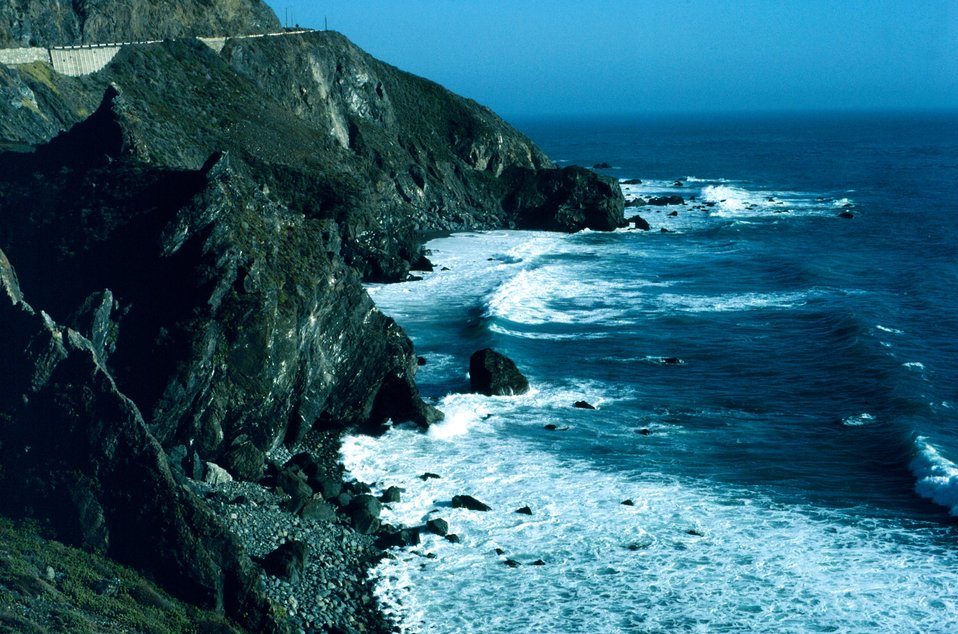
Probably northern California or southern Oregon